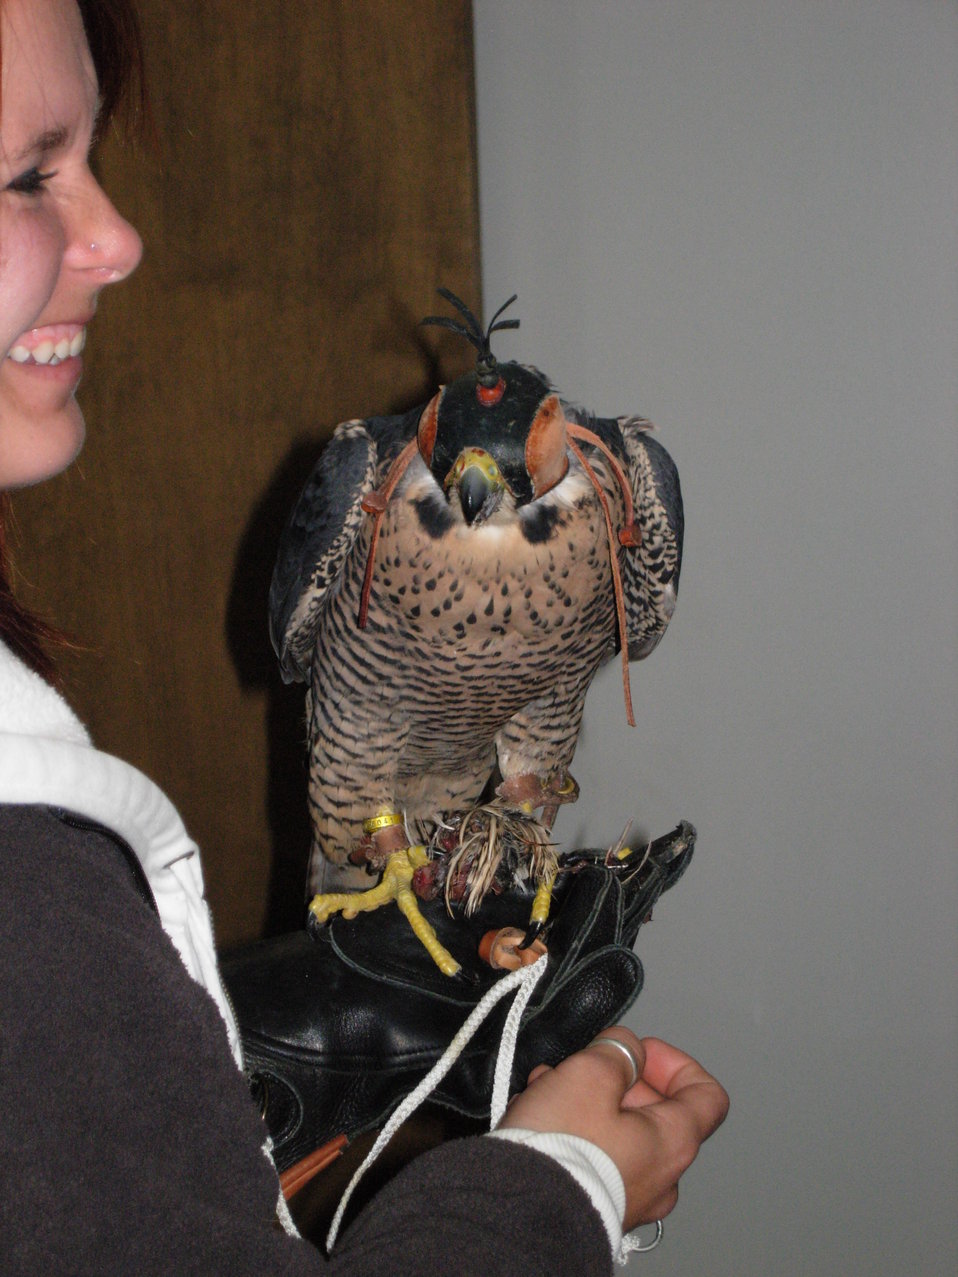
Rosie the Raptor

Lynsi Schneider from the Roosevelt Park Zoo in Minot, ND gave a raptor presentation at Upper Souris Refuge's 75th birthday celebration.